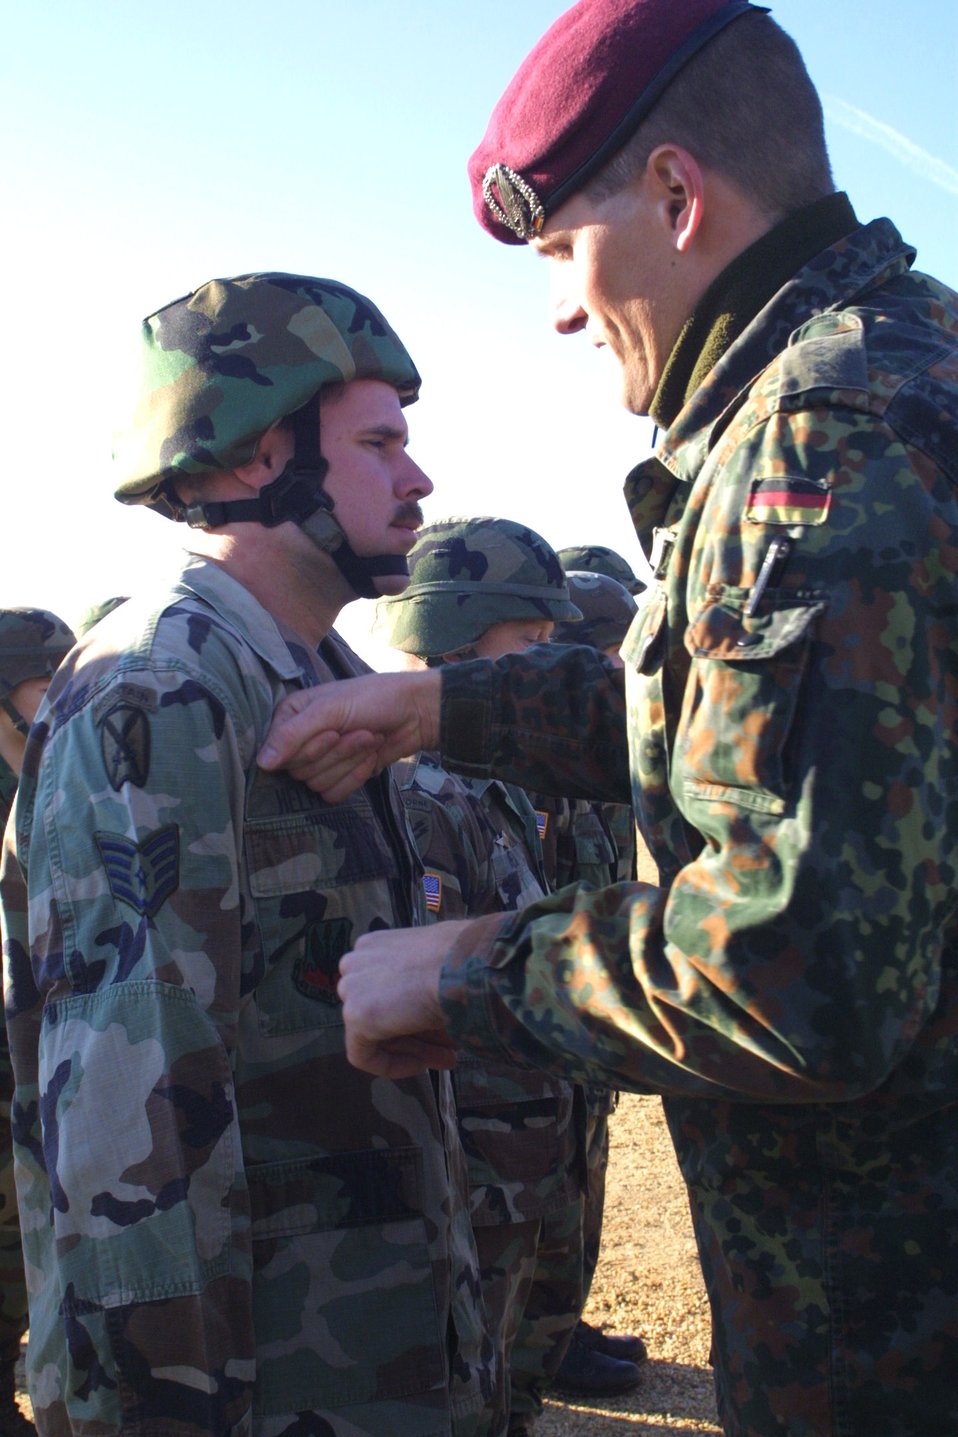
Toy drop

FORT BRAGG, N.C. (AFPN) -- Staff Sgt. Jefferson Helfrich receives his German jump wings from a German officer after Operation Toy Drop. Twelve Airmen joined more than 1,075 Soldiers in the charity jump. The toys are distributed to needy families at Pope Air Force Base, N.C., Fort Bragg, N.C., and in the local communities. Sergeant Helfrich is with the 18th Weather Squadron.